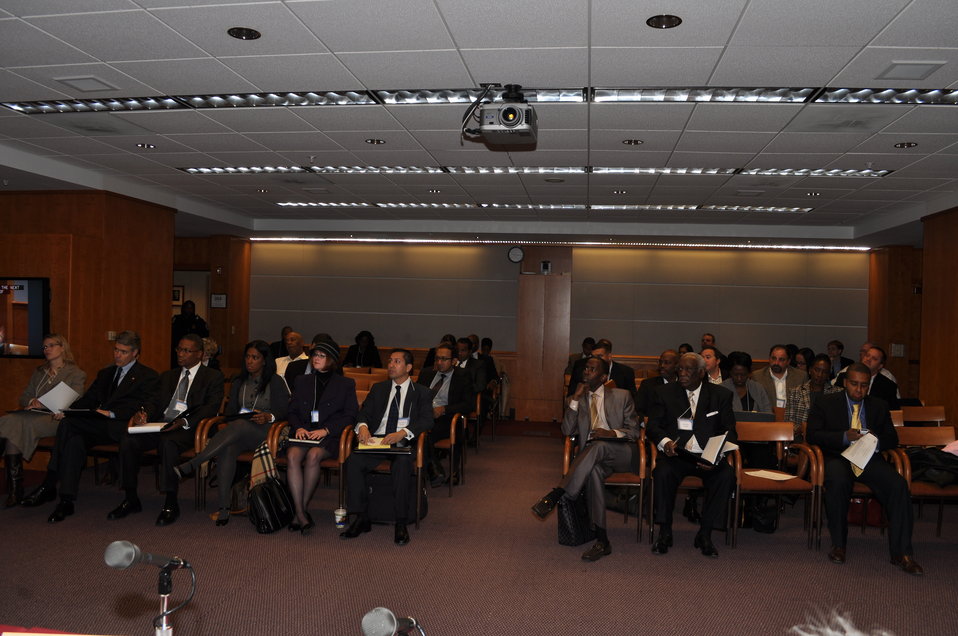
Capitalization Strategies

Workshop for small, minority and women owned businesses. Hosted by the Office of Communications Business Opportunities